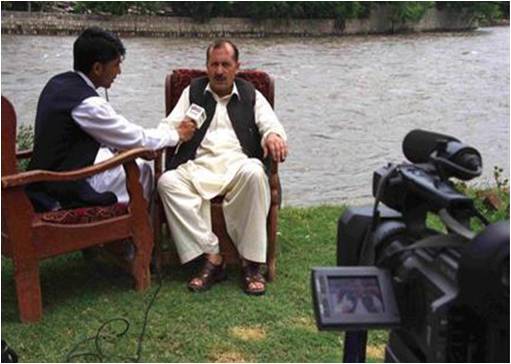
JSSP Legal Training